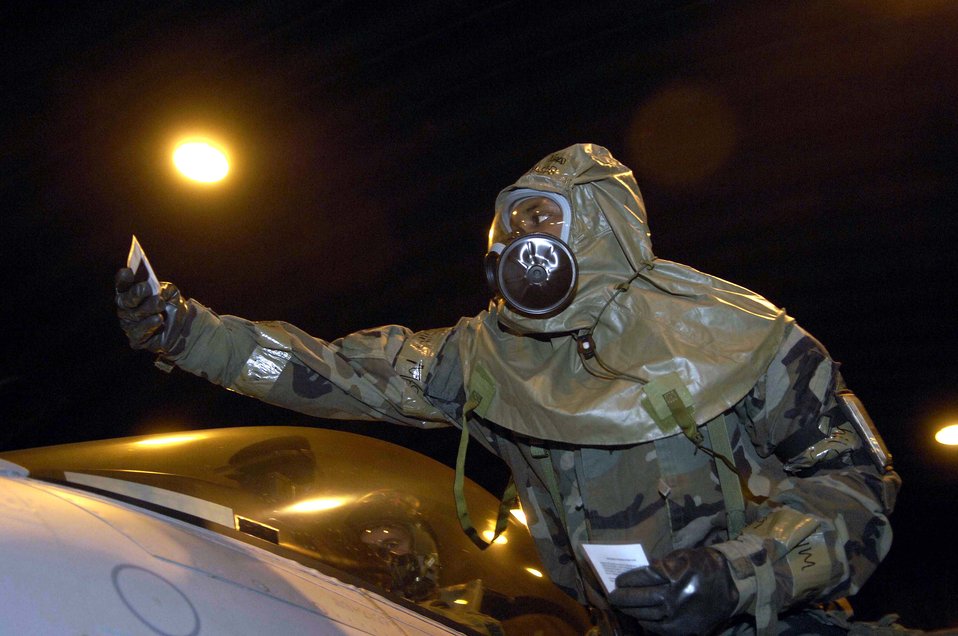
The search is on for bad chemicals

Staff Sgt Brandon Ward uses specially treated paper March 6 to detect chemical agents on an F-16 Fighting Falcon during a NATO Tactical Evaluation at Aviano Air Base, Italy. The evaluation is to determine if Aviano's 31st Fighter Wing is prepared to support NATO Response Force 9/10.